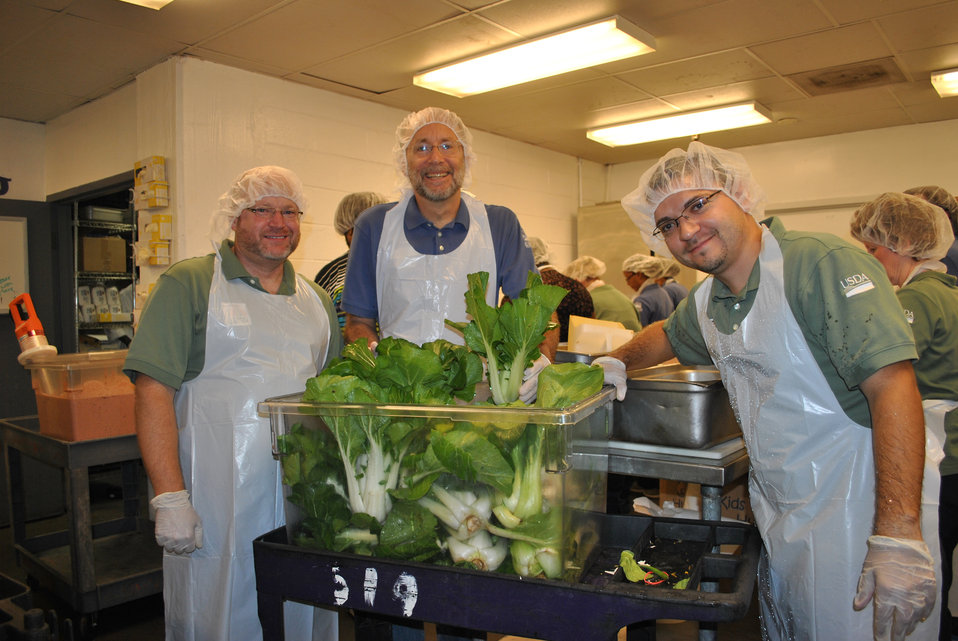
(L to R) DC Central Kitchen in Washington, D.C. Rich Holcomb employee, U.S. Department of Agriculture (USDA) National Agricultural Statistics Service (NASS) Brian Lounsbury, and USDA, National Institute of Food and Agriculture (NIFA) Dewell Delgado Paez stand with a bin of just washed bok choy that was grown USDA headquarters Peoples Garden in Washington, D.C.